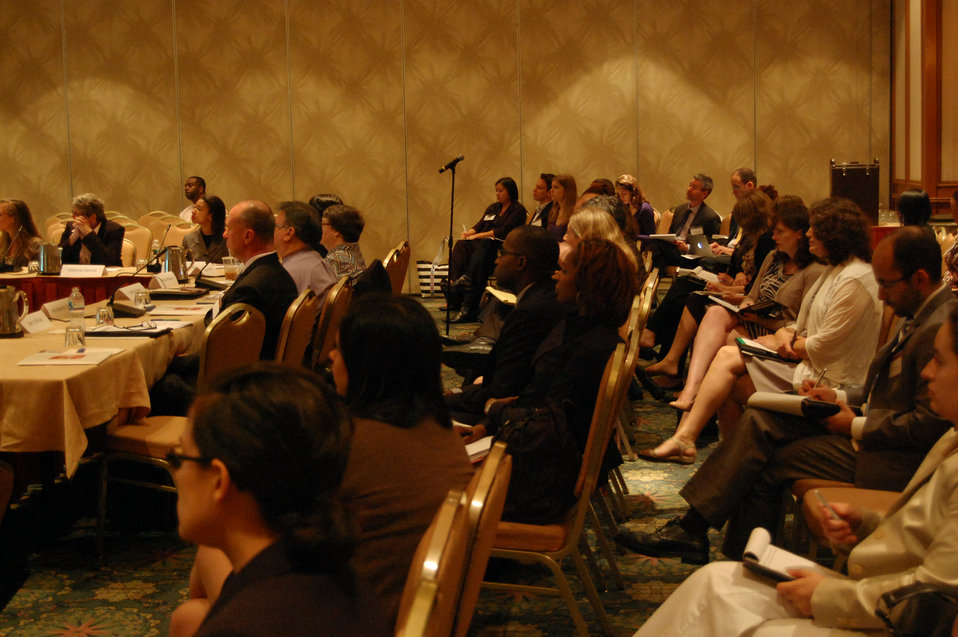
PACHA conf046